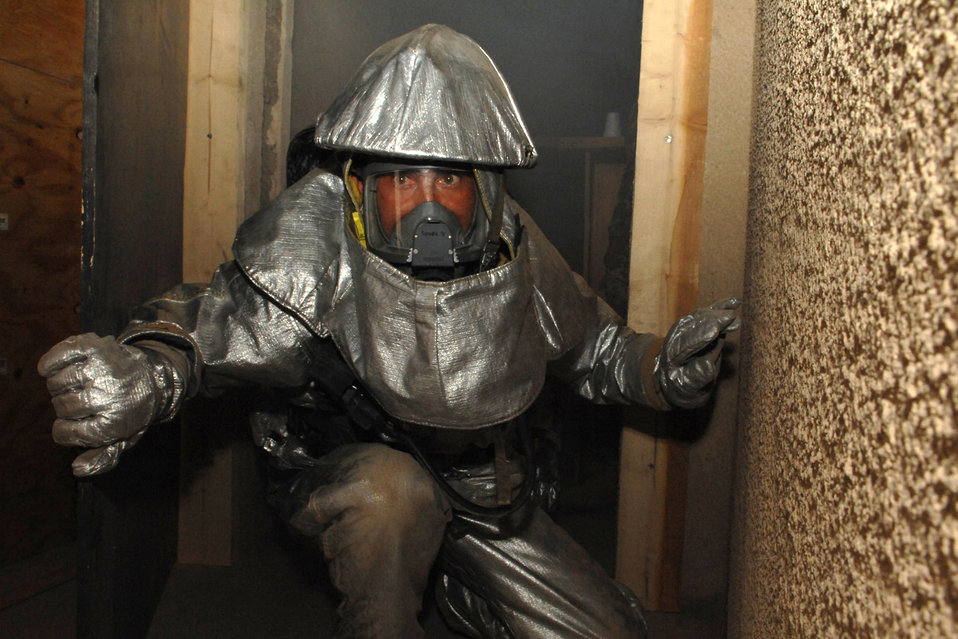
New training structure benefits Iraqi firefighters

An Iraqi firefighter emerges from a smoke-filled room during refresher training within confined spaces July 30 at Kirkuk Regional Air Base, Iraq. Firefighters with the 506th Expeditionary Civil Engineer Squadron here facilitated the training to teach Iraqi firefighters how to rescue victims trapped in a building burning.